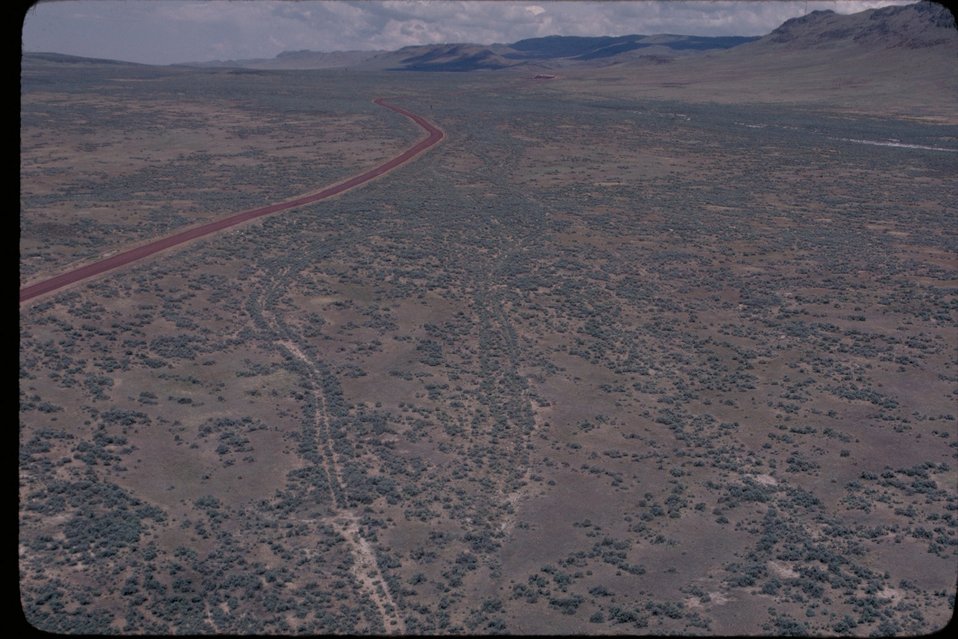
Oregon Trail near Teapot Dome Lower Snake River District